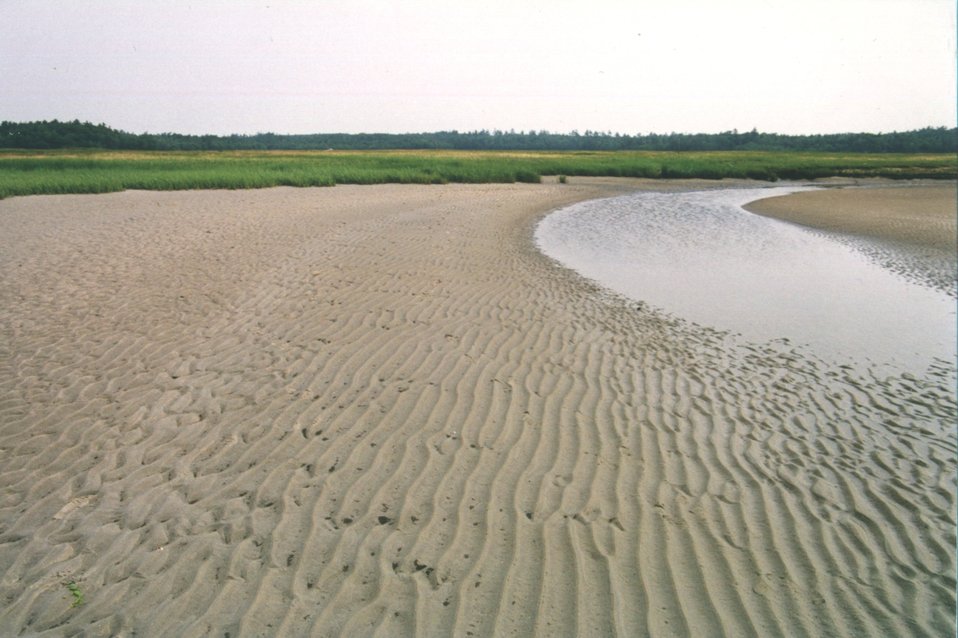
Tidal stream at low tide showing parallel ripple pattern in deeper areas versus hummocky pattern in shallower areas. Parallel ripples form perpendicular to tidal flow.